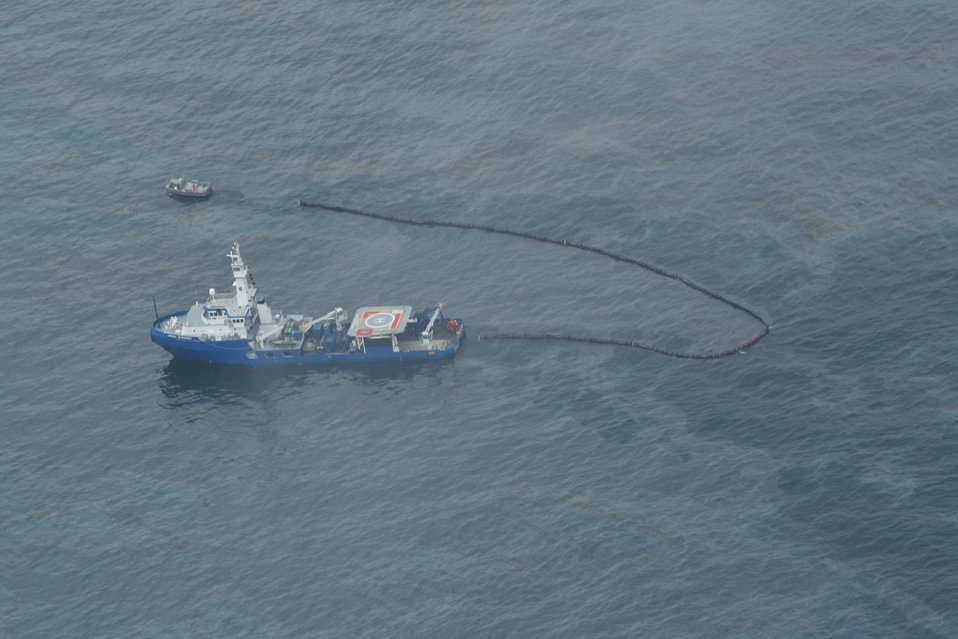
Flight 8 026